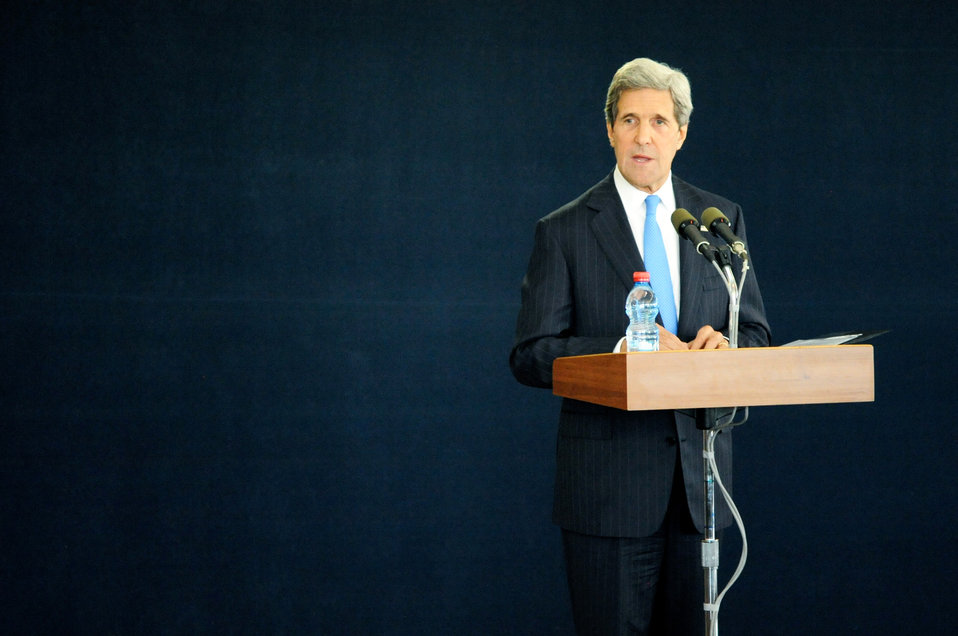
Secretary Kerry Addresses Reporters in Tel Aviv

U.S. Secretary of State John Kerry speaks during a news conference in Tel Aviv, Israel, on May 24, 2013.